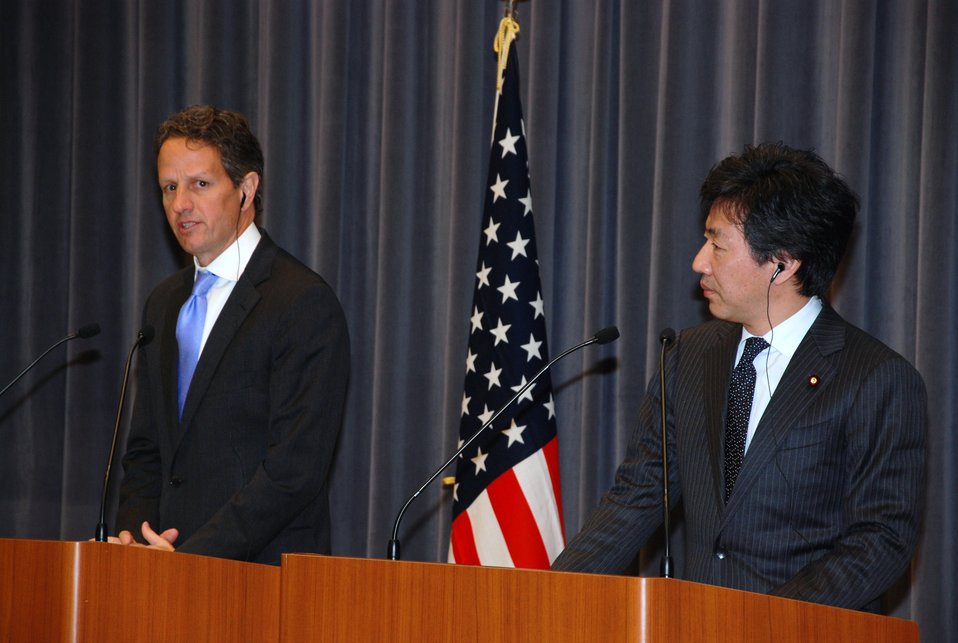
Secretary Geithner in Japan

On January 12, 2012, following a meeting with Japanese Finance Minister Jun Azumi at the Ministry of Finance in Tokyo, Treasury Secretary Tim Geithner participated in a joint press availability.